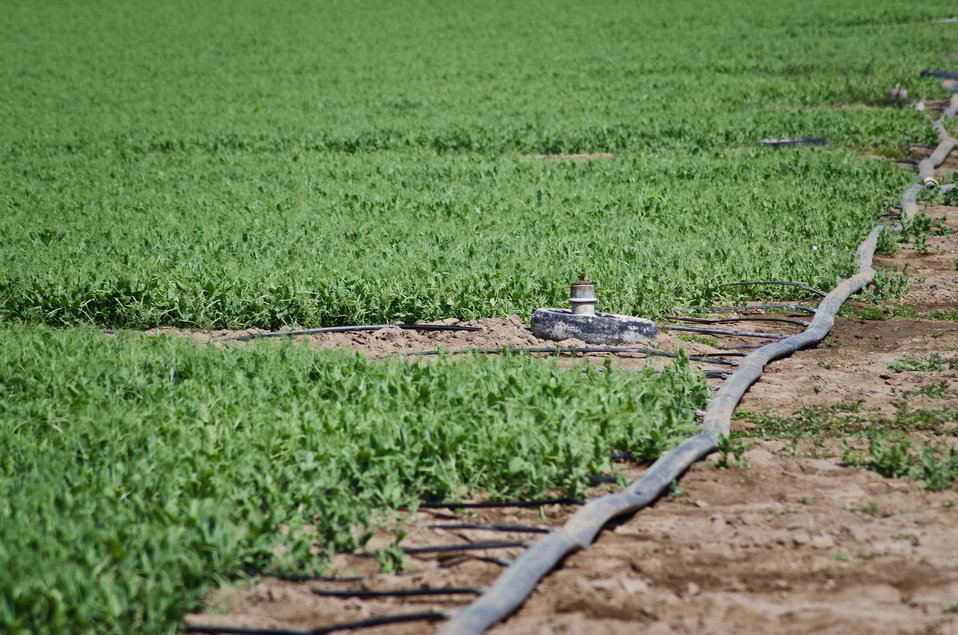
A deactivated irrigation standpipe (center) has a used tire around it to mark its location in a micro irrigated field at Leafy Greens Farms in the Salinas Valley, California on Thursday, June 16, 2011. Micro irrigation begins with an economical reuse of irrigation water hydrants at Leafy Greens Farm in the Salinas Valley of California on Thursday, June 16, 2011. A series of reduction couplings lead to the collapsible header tube that supply water to dozens of separate tubes. That take water to every plant in the row. Water evaporation is kept to a minimum because water is delivered to the soil, not sprayed into the air or to exposed areas.